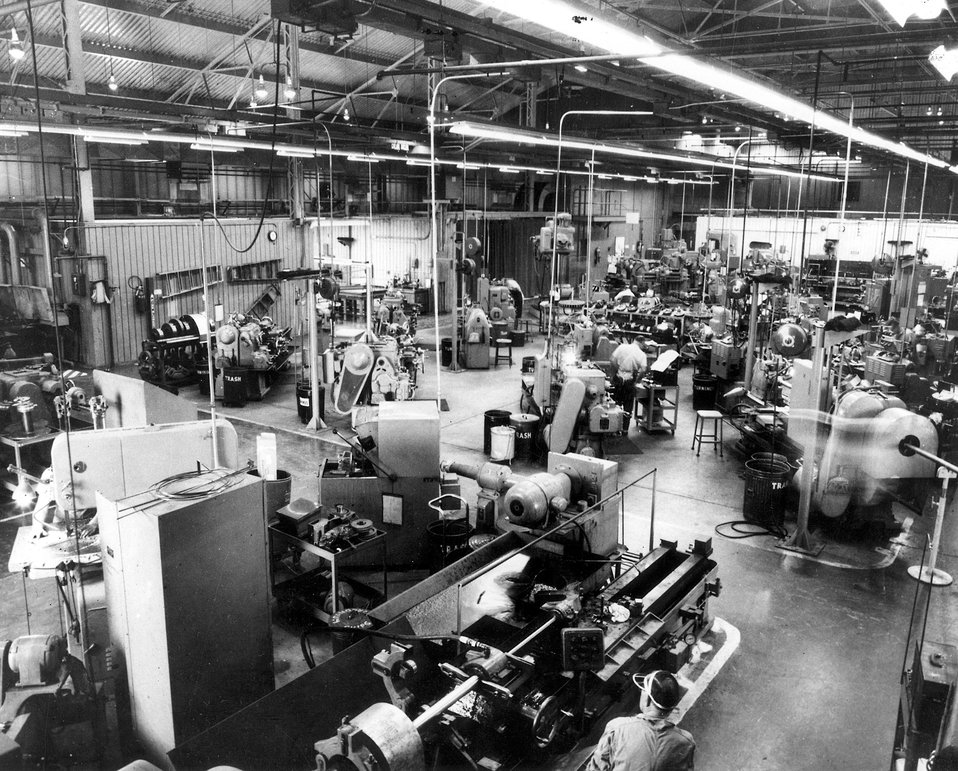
Much of the intricate scientific and technical equipment needed to implement Battelle-Northwest's extensive research and development program is fabricated in this specially-equipped machine shop at Pacific Northwest Laboratory, Richland, Washington. c. 1966